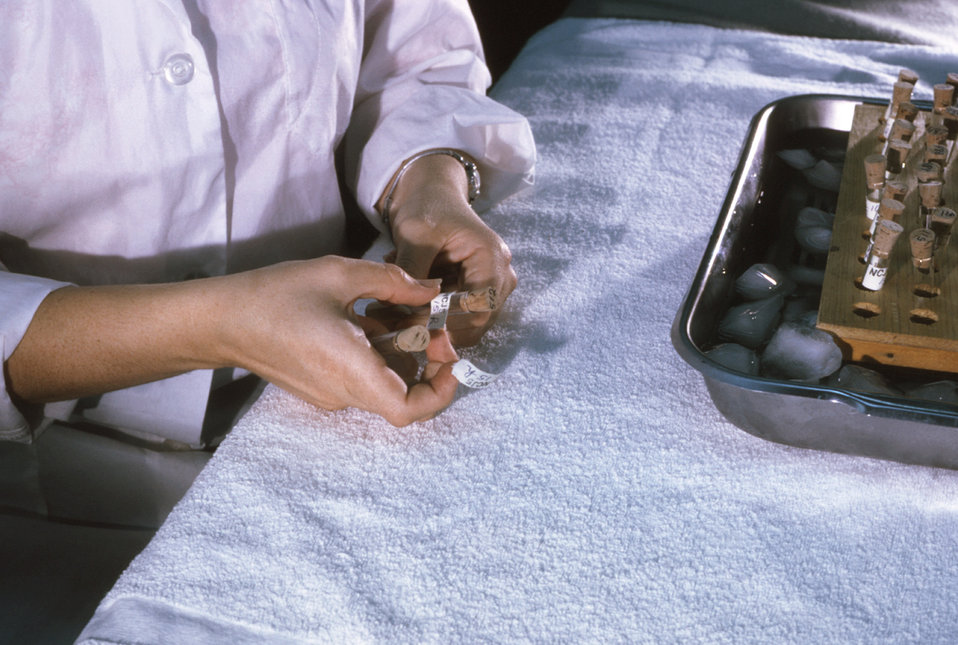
This CDC laboratorian is shown here labeling vials of mosquito suspension during an arbovirus study.